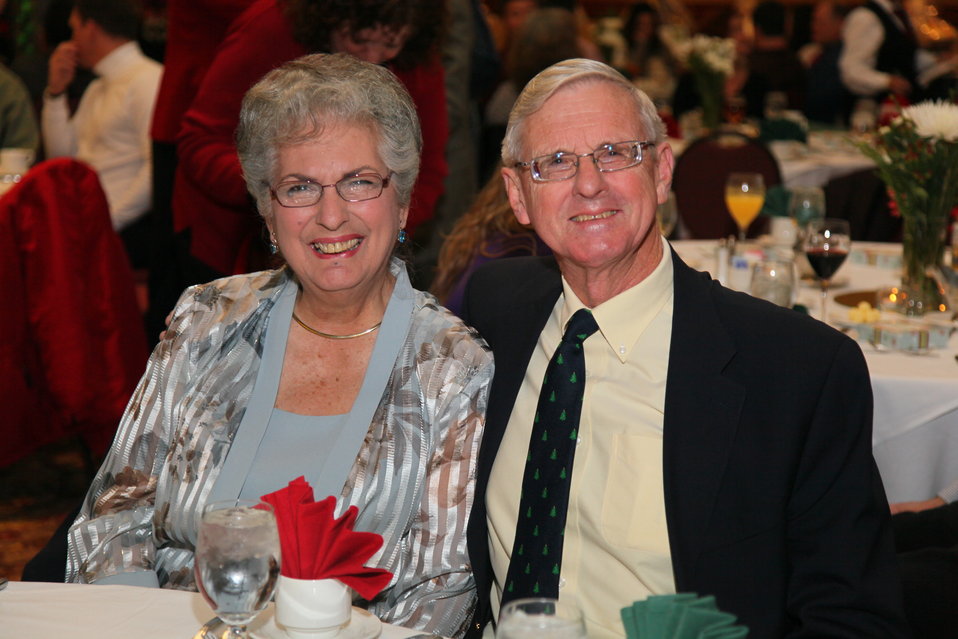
Sacramento District Holiday Party 2011